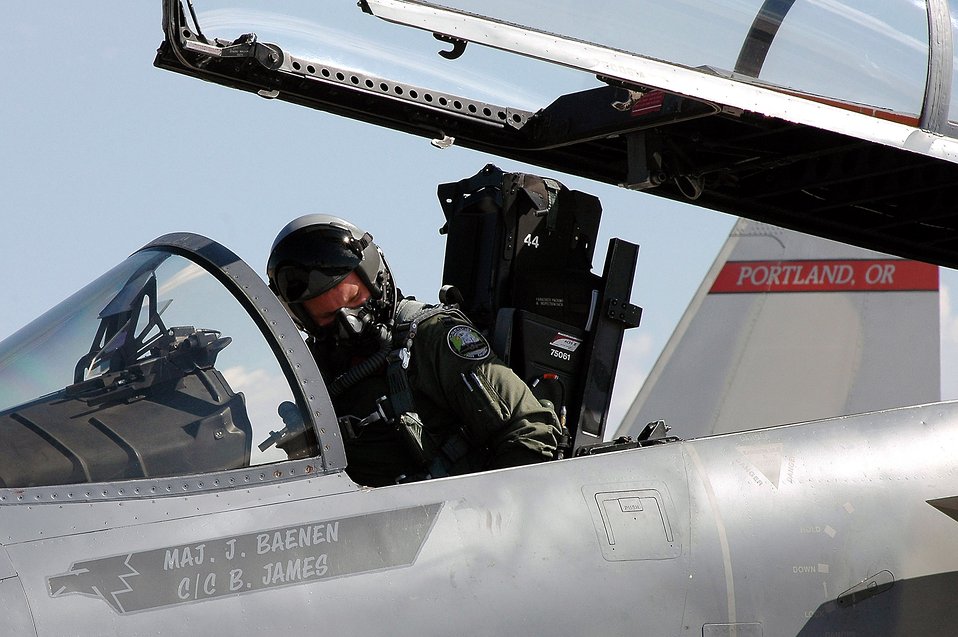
Revving up for Red Flag

Captain Bill Kopp prepares to taxi an F-15 Eagle on the Nellis Air Force Base, Nev., flightline Aug. 28 during the Red Flag 07-3 exercise. Servicemembers from all the U.S. military branches, along with coalition forces, are participating in the event. Captain Kopp is a pilot with the Air National Guard's 142nd Fighter Wing at Portland, Ore.